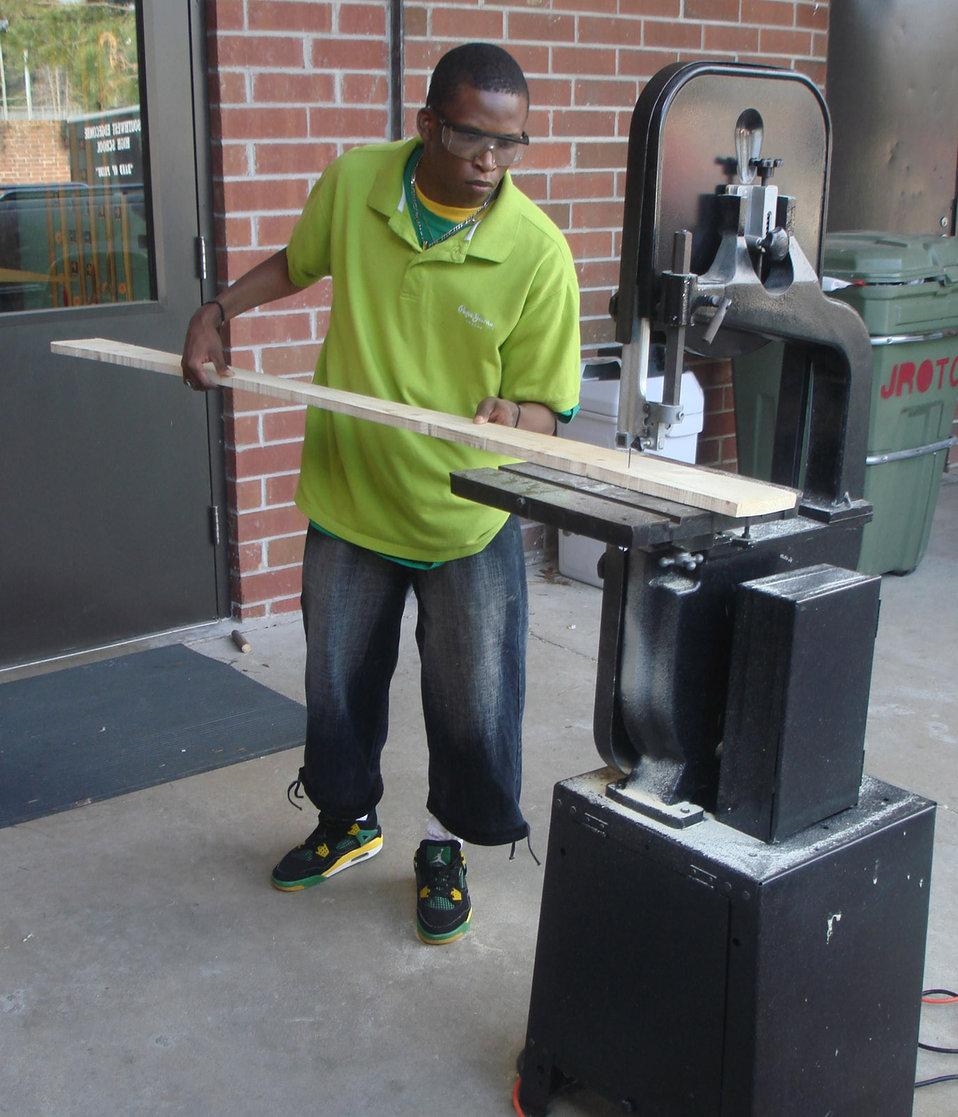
Junior ROTC cadets revisit history, build Wright Flyer replica

An Air Force Junior ROTC cadet of Detachment NC-945 and other cadets worked for more than a year to build a replica of the Wright Flyer at SouthWest Edgecombe High School, N.C., after visiting the Wright Brothers' memorial in Kitty Hawk, N.C. The detachment, made up of 248 cadets, finished the project in December 2008, just one week prior to the anniversary of the Wright Brothers' first flight.